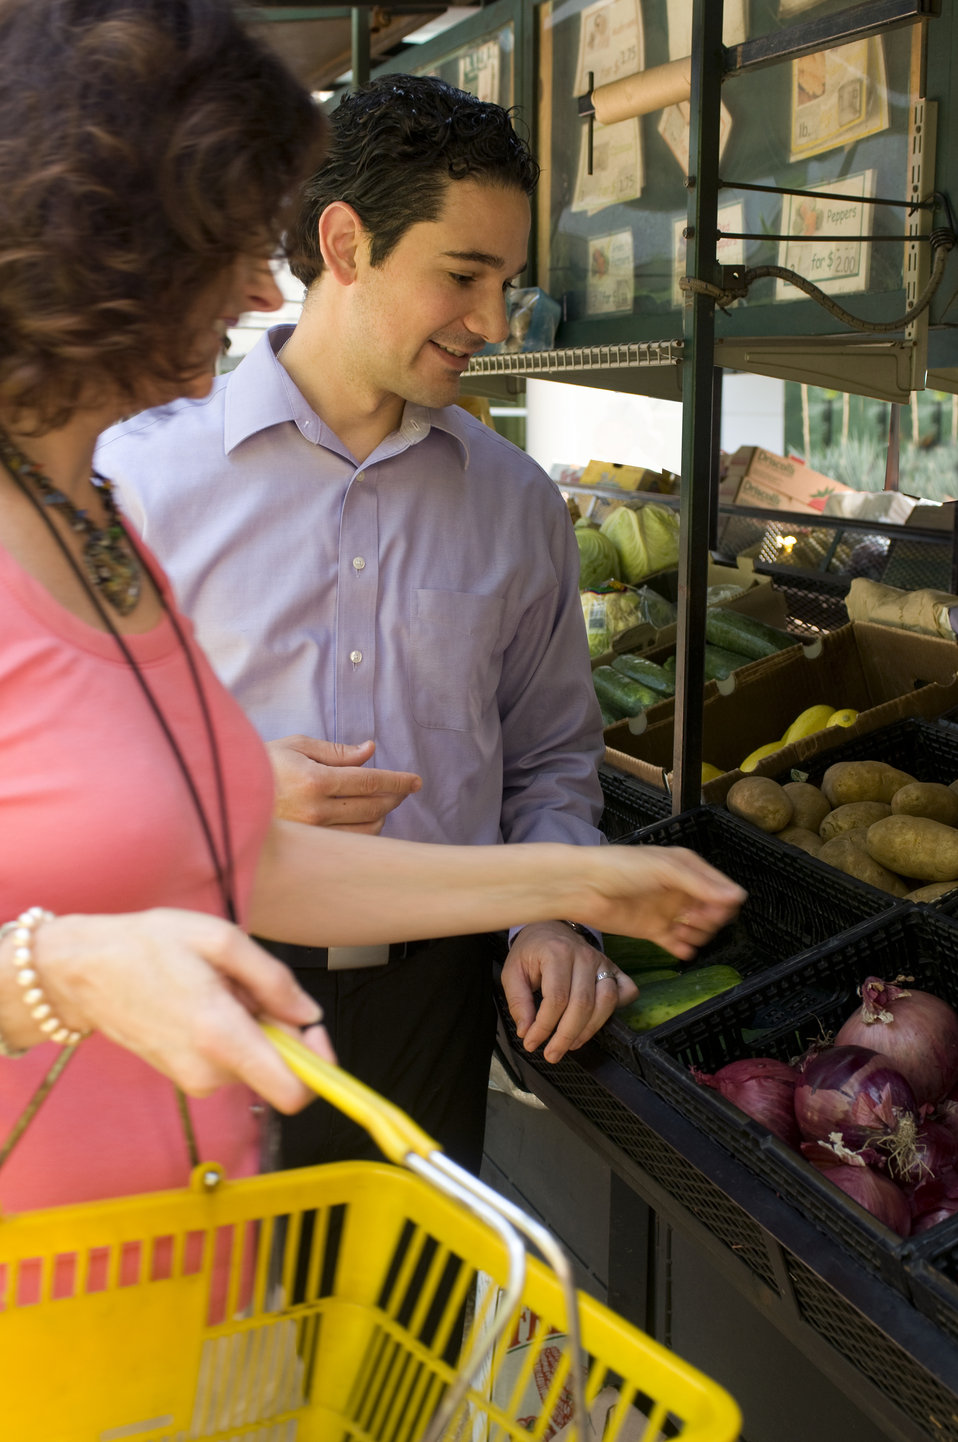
The man and woman pictured here were in the process of choosing an array of healthy fruits and vegetables at a mobile produce market, and placing their choices into yellow, hand-held plastic baskets. In this particular view, they were discussing their food choices, the freshness, and nutritional attributes of each selection, in this case, the purple onions.